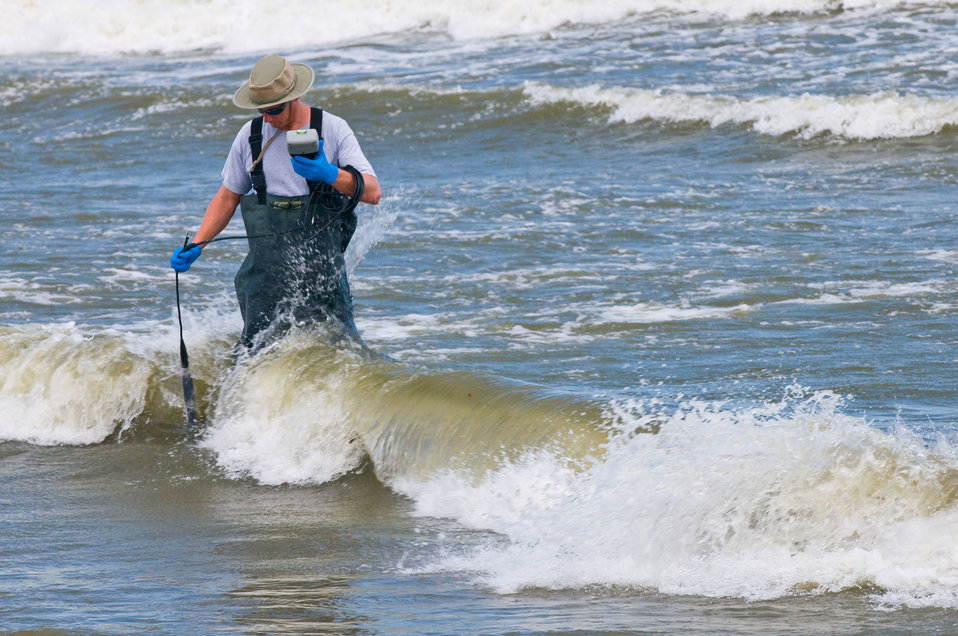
June 4, Testing the water at Grand Isle State Park, La

Patrick Warnick, EPA contractor measures temperature, PH and salinity of water at Grand Isle State Park, Grand Isle, LA.